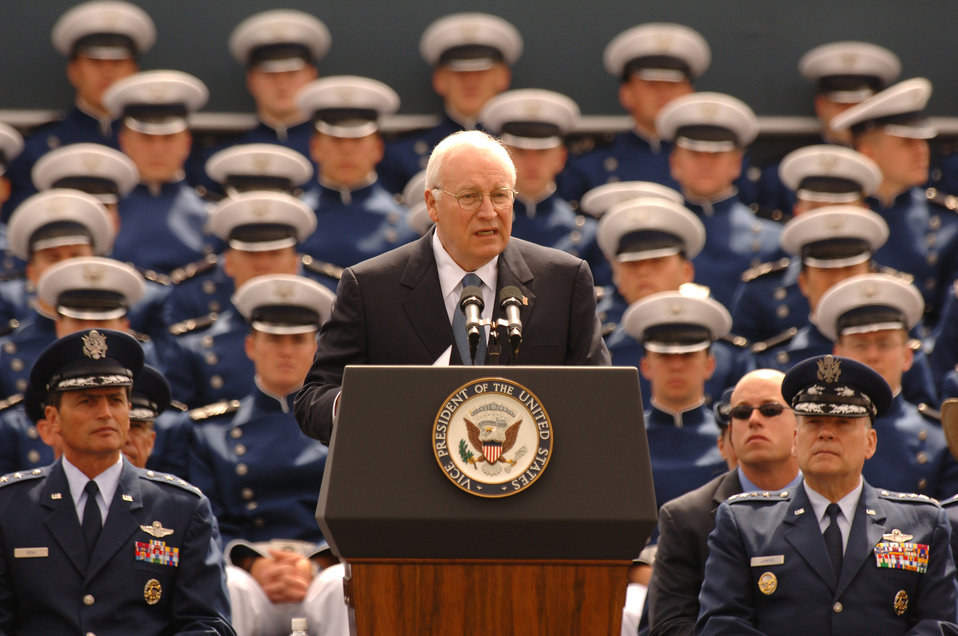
Vice president addresses academy Class of 2005

U.S. AIR FORCE ACADEMY, Colo. -- Vice President Richard B. Cheney addresses the graduating academy Class of 2005 here.